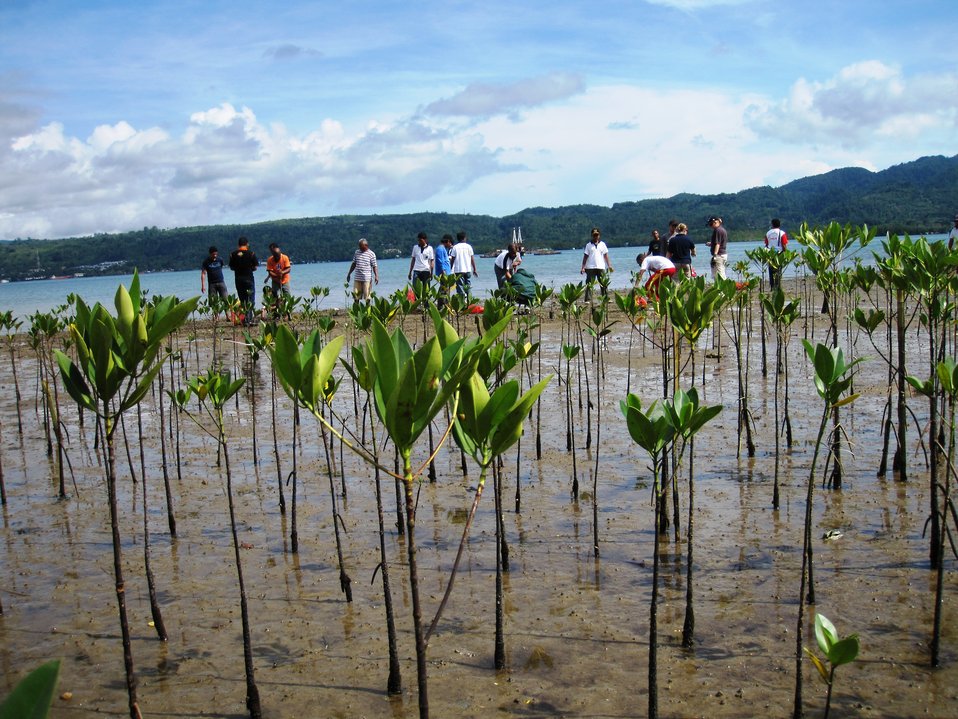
PP 2010 Volunteers Join Indonesians To Replace Mangrove Trees

Pacific Partnership 2010 volunteers join Indonesians to replace hundreds of mangrove trees along the coast of Ambon Island in the Banda Sea, Eastern Indonesia, on July 29, 2010. The USNS MERCY/PP10 is participating with ships from Indonesia, Australia and Singapore in the local SAIL BANDA activities, dedicated to improving the future of small islands and promoting awareness of the importance of preserving and caring for coral reefs and wetlands.